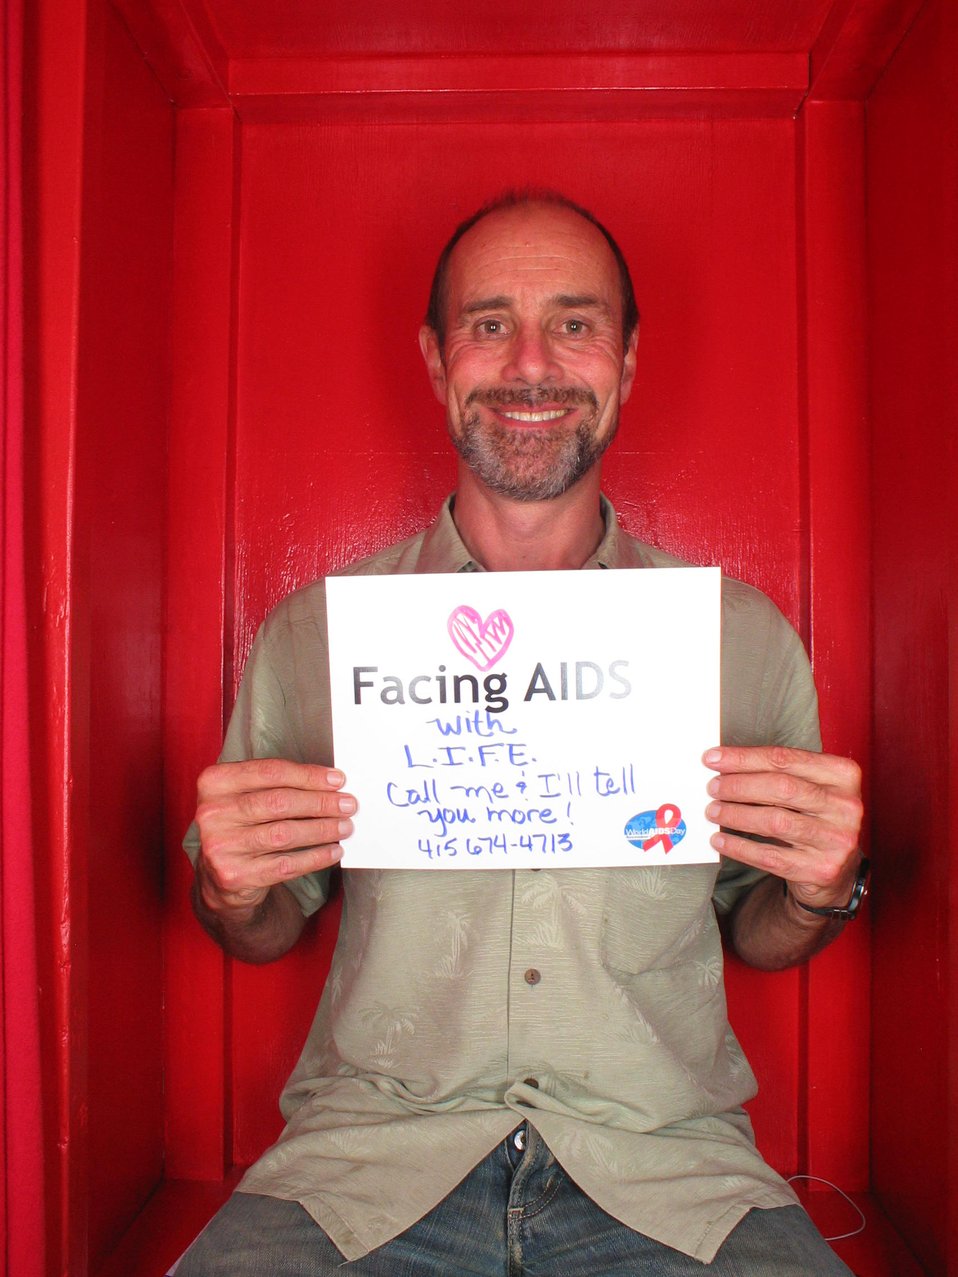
Facing AIDS with L.I.F.E.